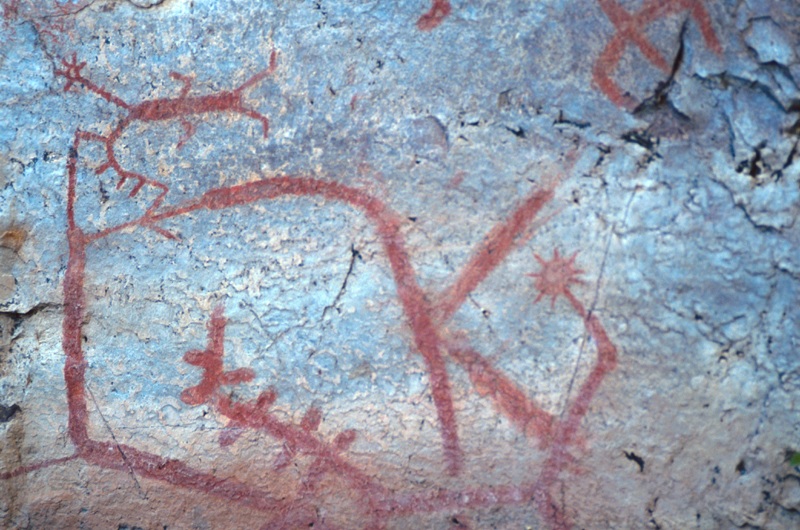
Petroglyph on the Lower Salmon River Cottonwood Field Office Upper Columbia Salmon Clearwater District